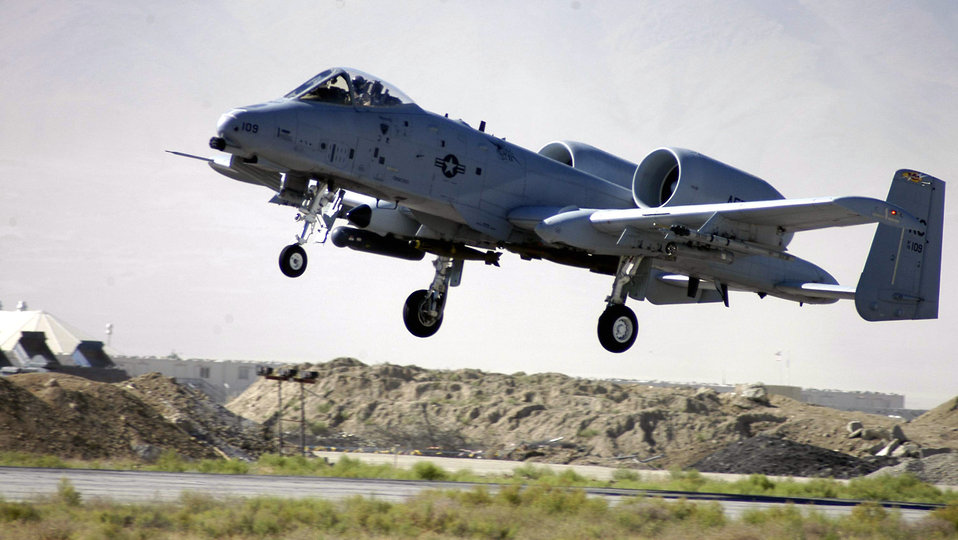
July 1 airpower summary: A-10 destroys anti-Afghan forces

An A-10 Thunderbolt II takes off from Bagram Airfield, Afghanistan. A-10s provide close-air support and airborne forward air control.